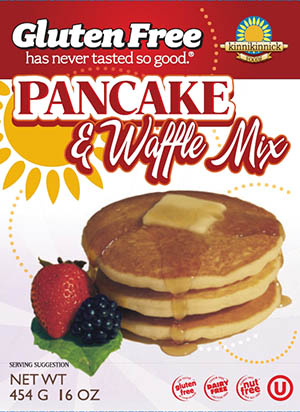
RECALLED – Waffles, Mix, Bread Crumbs

January 8, 2014 – Product Recall – Allergy Alert - Undeclared Milk in Five Kinnikinnick Foods Products.